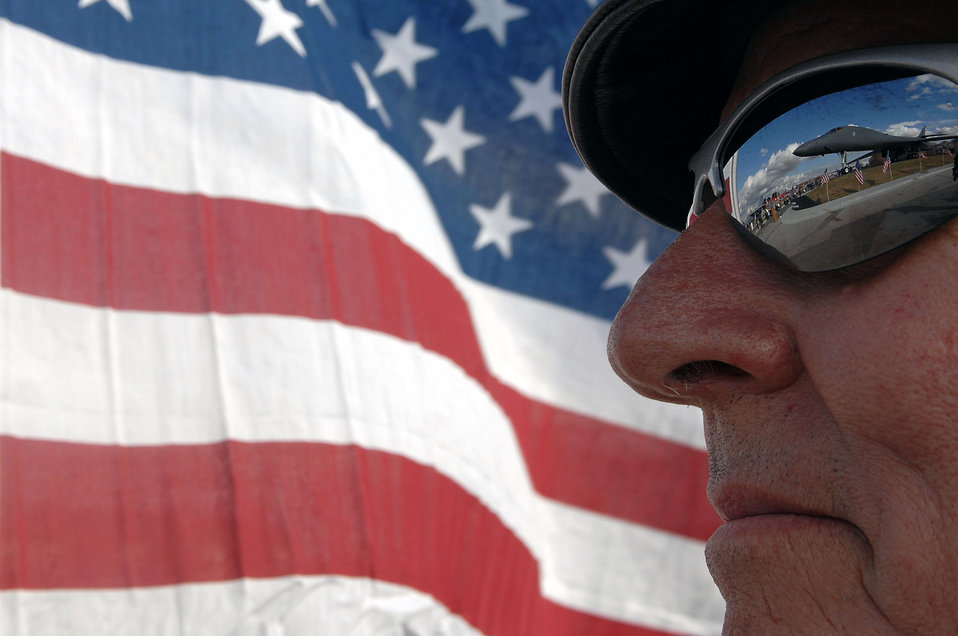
These colors don't fade

The B1-B Lancer static display is reflected in the sunglasses of Ed Woidt during the 9/11 memorial ceremony Sept. 11 at the South Dakota Air and Space Museum. Mr. Woidt is one of the Patriot Guard Riders who honor America's fallen heroes, veterans and members who continue to serve.